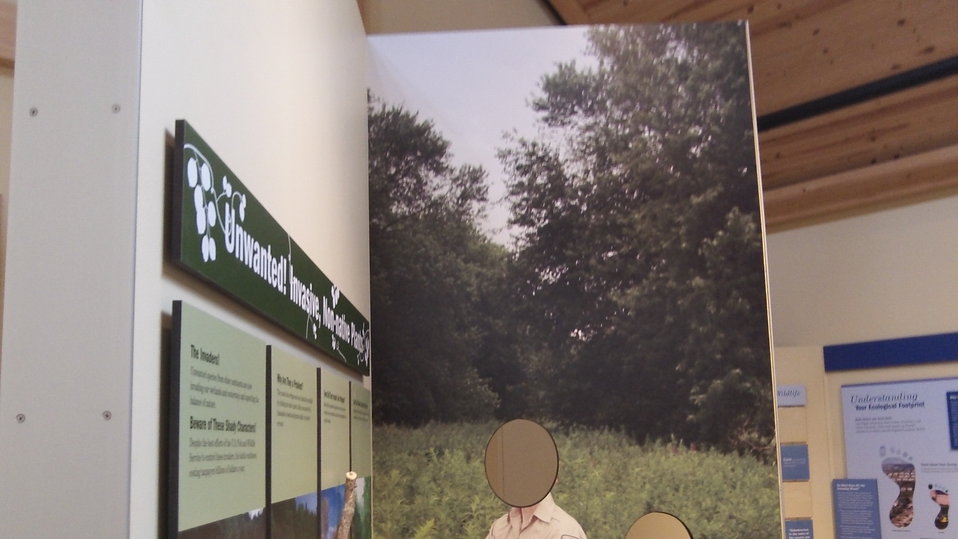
Assabet River National Wildlife Refuge

Inside the Visitor's Center at Assabet River National Wildlife Refuge, Sudbury, MA.